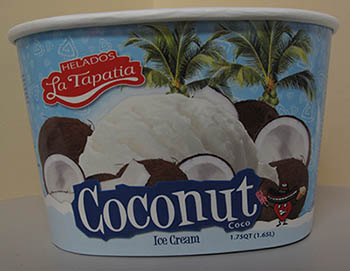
RECALLED – Ice cream products

March 19, 2014 – Product Recall – Helados La Tapatia, Inc. Recalls Products Because of Possible Health Risk.